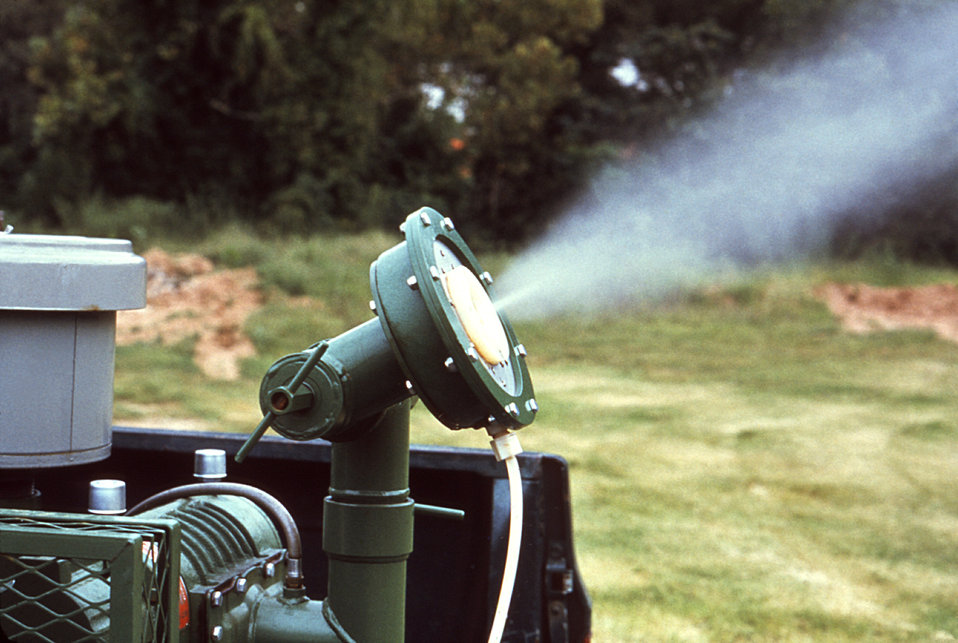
This 1981 image depicts a close-up perspective of the emission nozzle located on a truck-mounted LECO-HD ULV (ultra-low volume) non-thermal fog generator, which was emitting an insecticidal mist.